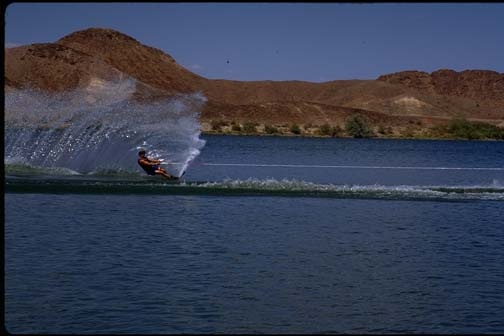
Water skier at Senator Wash during a water skiing tournament.